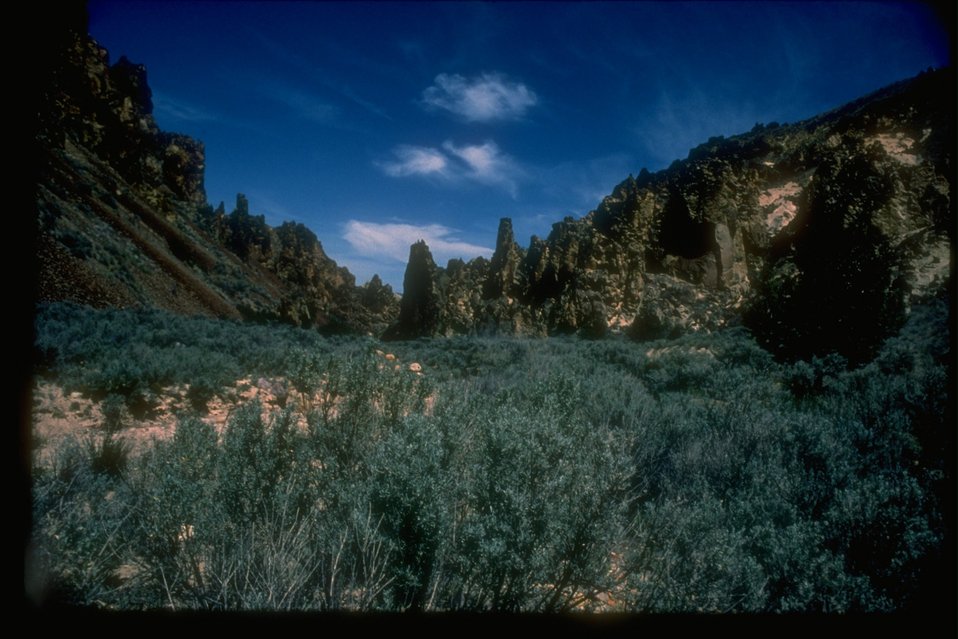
Scenic picture of Leslie Gulch, an Area of Critical Environmental Concern.